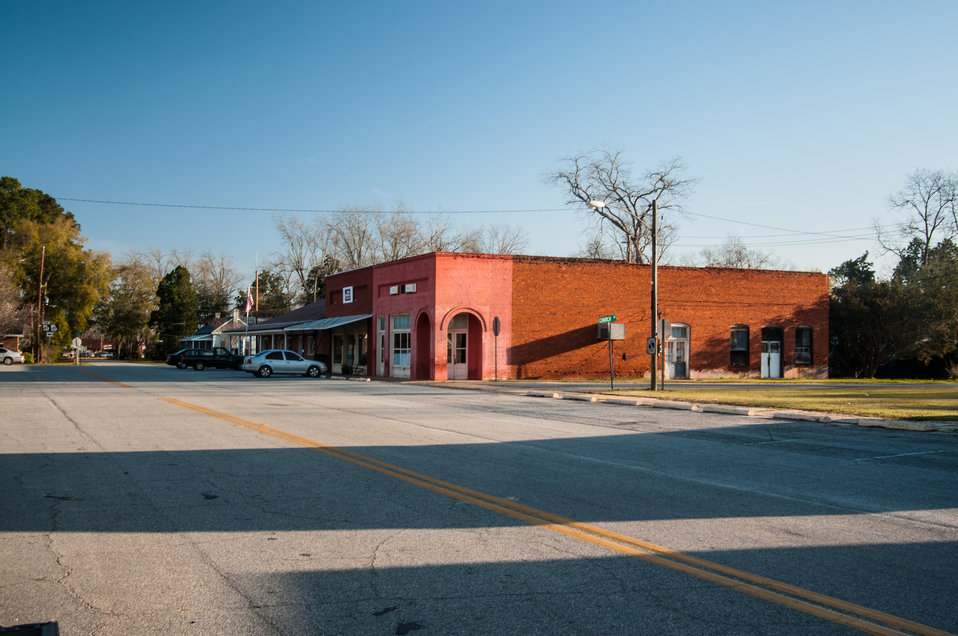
A sunny day in downtown Morgan, GA on Mar. 7, 2013. The U.S. Department of Agriculture (USDA) offers many economic grants, loans and conservation contracts through Rural Development (RD) and the Natural Resources of Conservation Service (NRCS) for areas of rural America with a high percentage of people living below the poverty level and considered economically distressed.